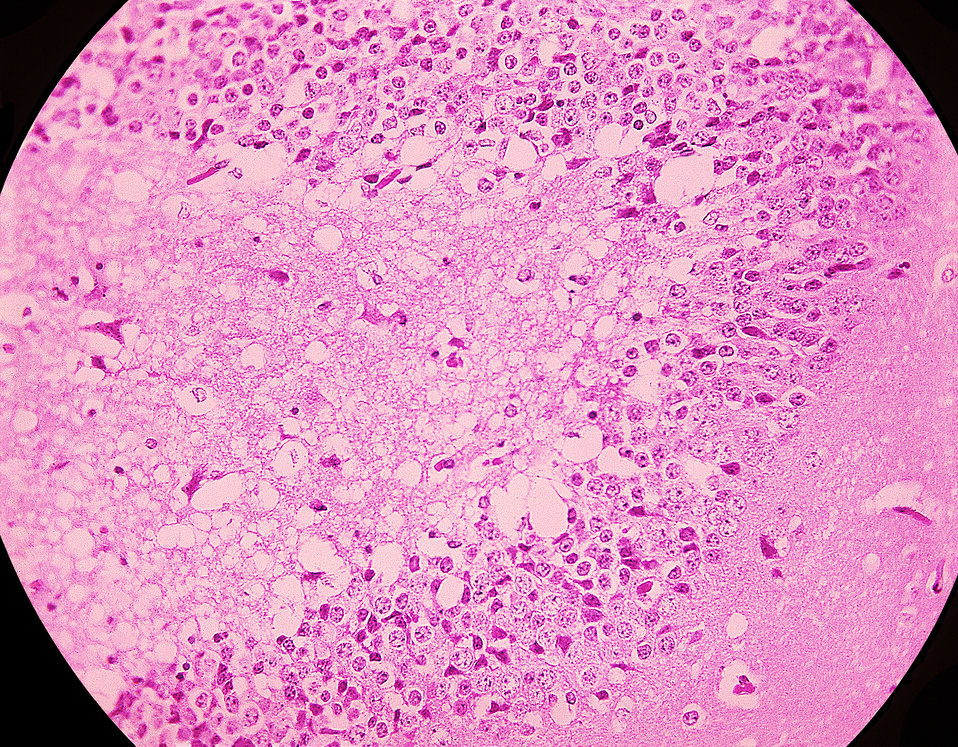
Magnified 300X, this photomicrograph of mouse brain tissue after dying of Venezuelan Encephalitis reveals neural necrosis and edema.